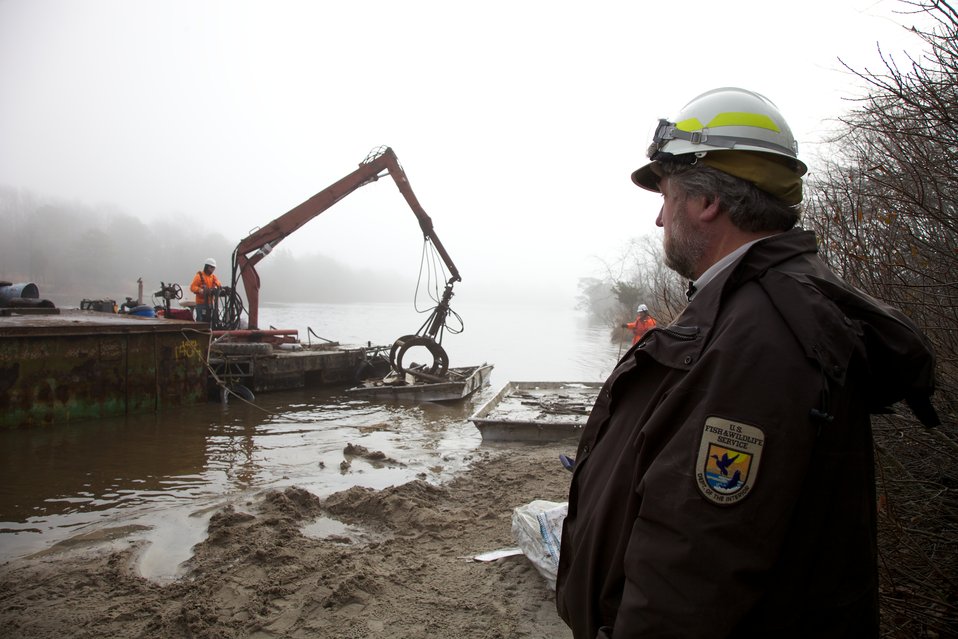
Forsythe NWR debris cleanup

FWS contract administrator Mike Durfee observes water-based debris removal at E.B. Forsythe National Wildlife Refuge.